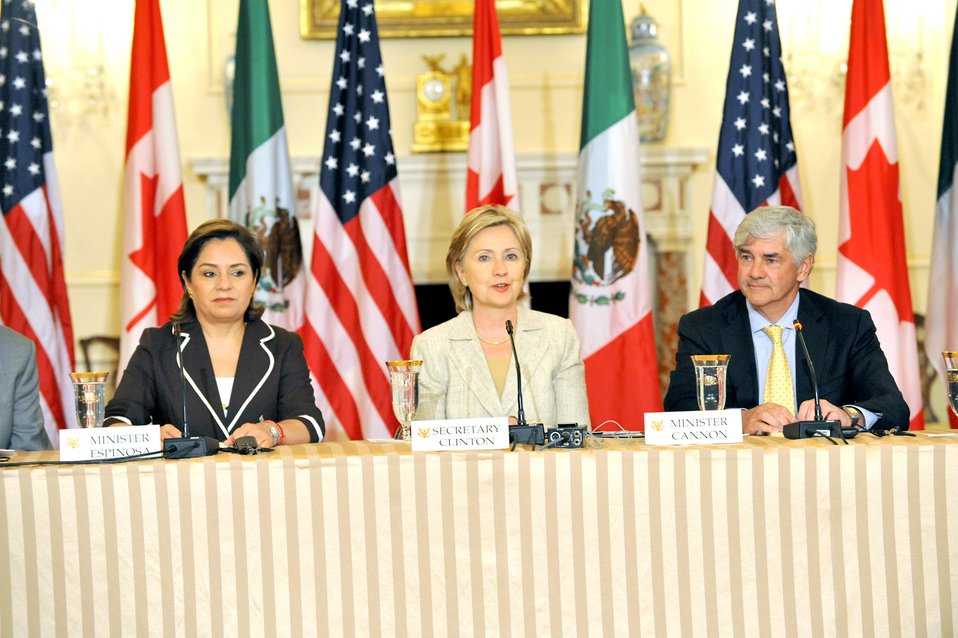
Secretary Clinton Hosts North American Trilateral Ministerial

U.S. Secretary of State Hillary Rodham Clinton hosts the North American Trilateral Ministerial with Her Excellency Dr. Patricia Espinosa Cantellano, Secretary of Foreign Relations of Mexico and The Honorable Lawrence Cannon, P.C., M.P., Minister of Foreign Affairs of Canada, in the Benjamin Franklin Room of the U.S. Department of State in Washington, DC July 16, 2009.